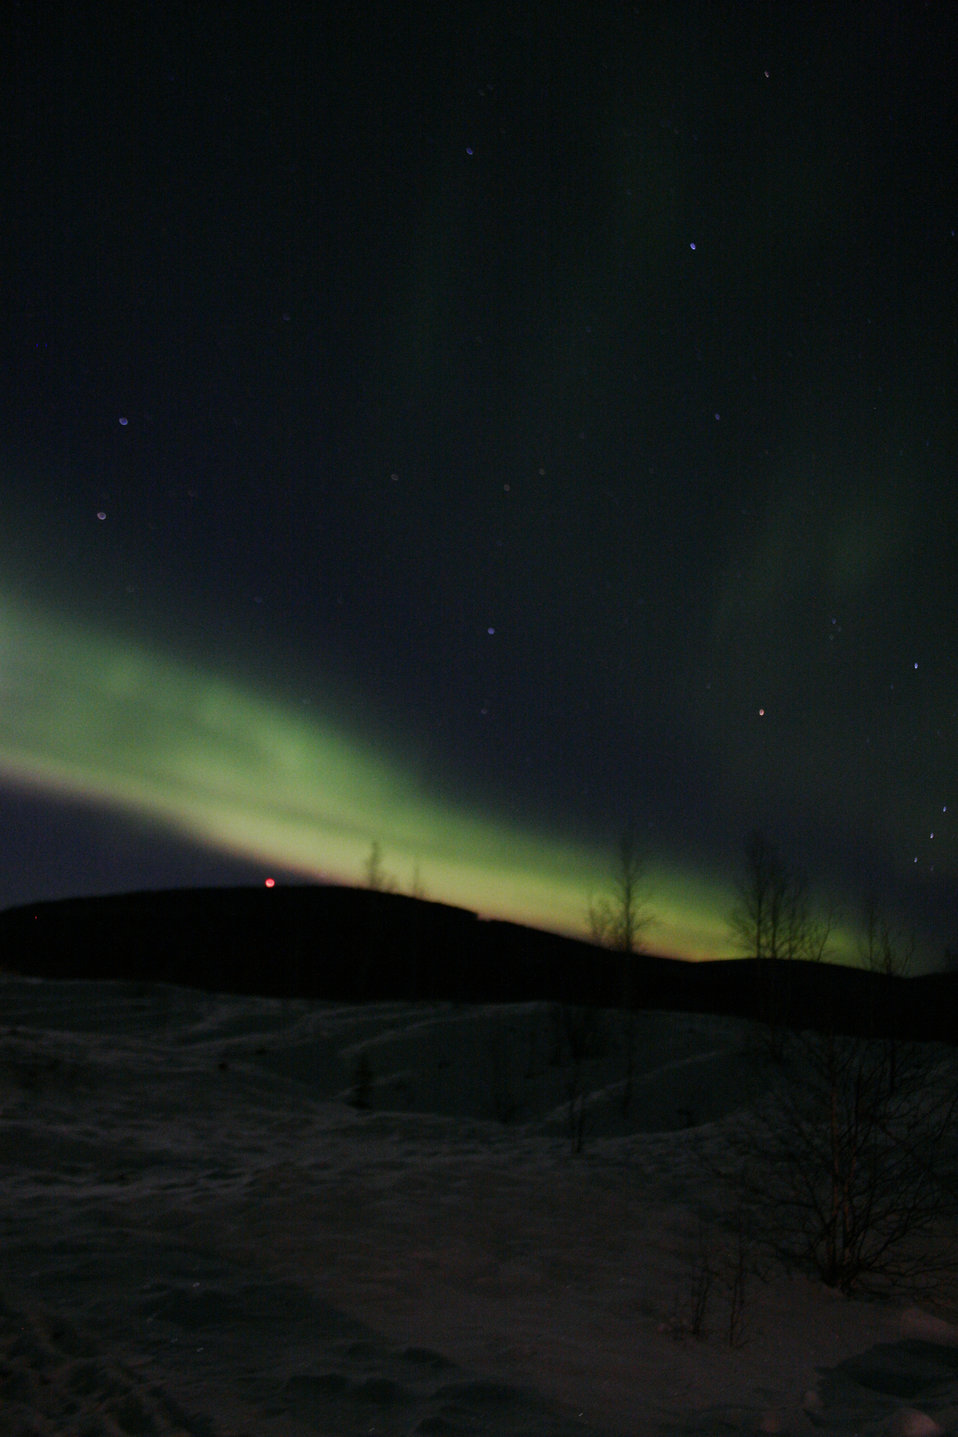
Northern Lights

A view of the Northern Lights